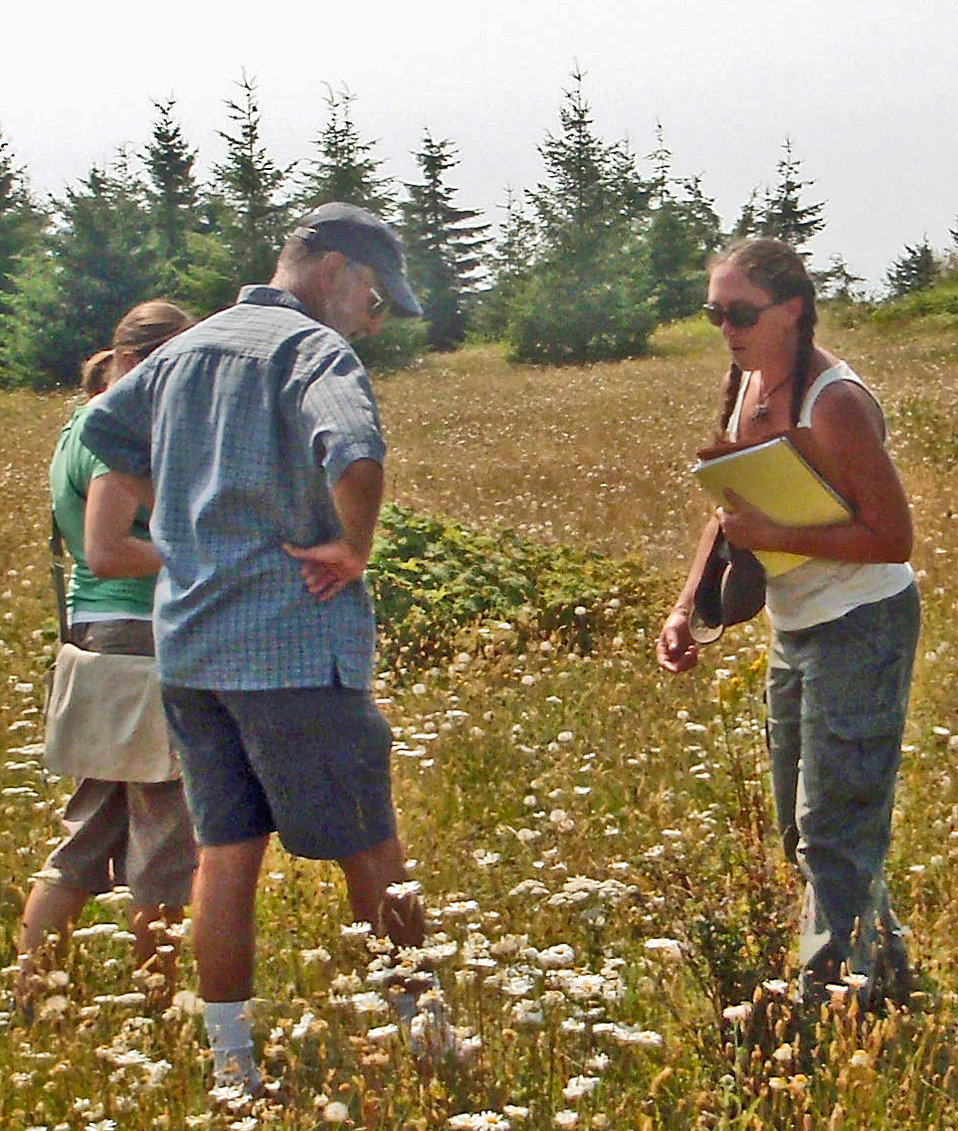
Silverspot Field-a

U.S. Department of Agriculture (USDA) Forest Service Siuslaw National Forest biologist Michele Dragoo shows volunteers how to identify different types of wildflowers found on Mount Hebo in the Siuslaw National Forest in Oregon.